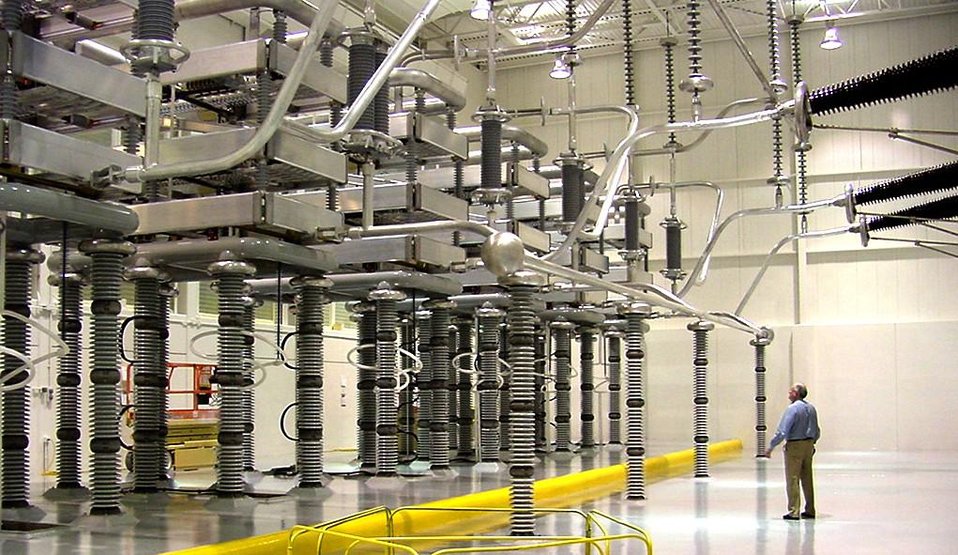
BONNEVILLE POWER ADMINISTRATION COMPLETES THE MODERNIZATION OF BPA'S CELILO CONVERTER STATION AT THE DALLES, OREGON.

THE CELILO CONVERTER STATION IS LOCATED AT THE NORTHERN END OF THE 846 MILE DIRECT CURRENT PACIFIC INTERTIE THAT CONNECTS THE PACIFIC NORTHWEST WITH LOS ANGELES, CALIFORNIA. THE MODERNIZATION PROJECT, COMPLETED IN JUNE, 2004, USES SOLID-STATE SILICON CHIPS THAT SHOULD ALLOW THE SYSTEM TO WORK COOLER, SAFER AND BE ECOLOGICALLY IMPROVED.